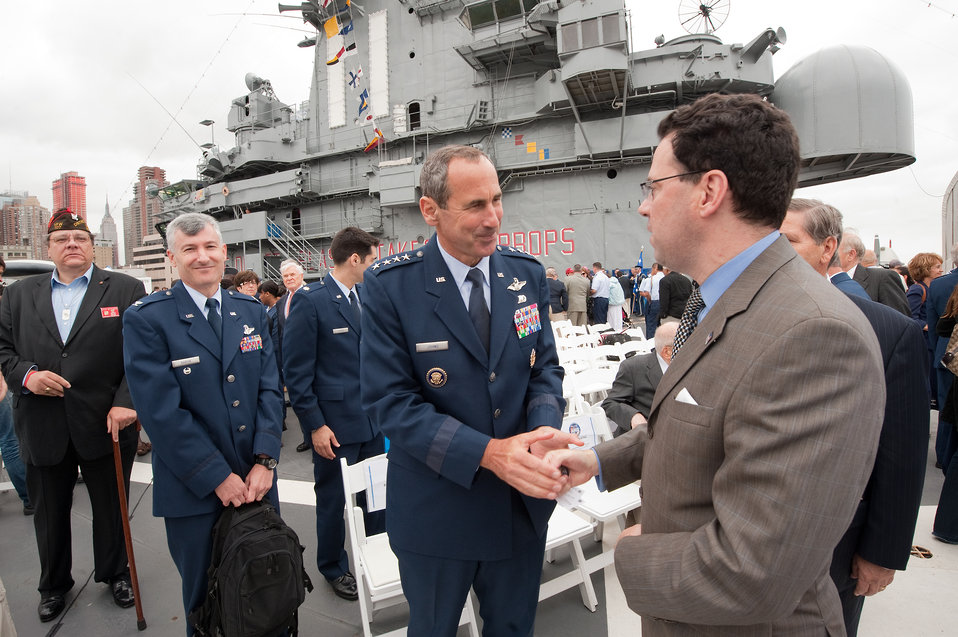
Air Force Week New York City Proclamation Ceremony

General Raymond Johns, Commander of Air Mobility Command, presents his coin to Mr. David A. Winters, Executive Vice President of the Intrepid Sea, Air & Space Museum, for hosting the Air Force Week New York City proclamation ceremony on the fightdeck of the USS Intrepid on Aug. 24, 2010. The event was highlighted by a six-ship flyover by the USAF Thunderbirds. The Honorable Michael Donley, Secretary of the Air Force attended, along with General Raymond Johns, Commander of Air Mobility Command. The Police Commissioner of the City of New York, the Honorable Raymond Kelly, represented NYC. Mr. Greg Kelly of